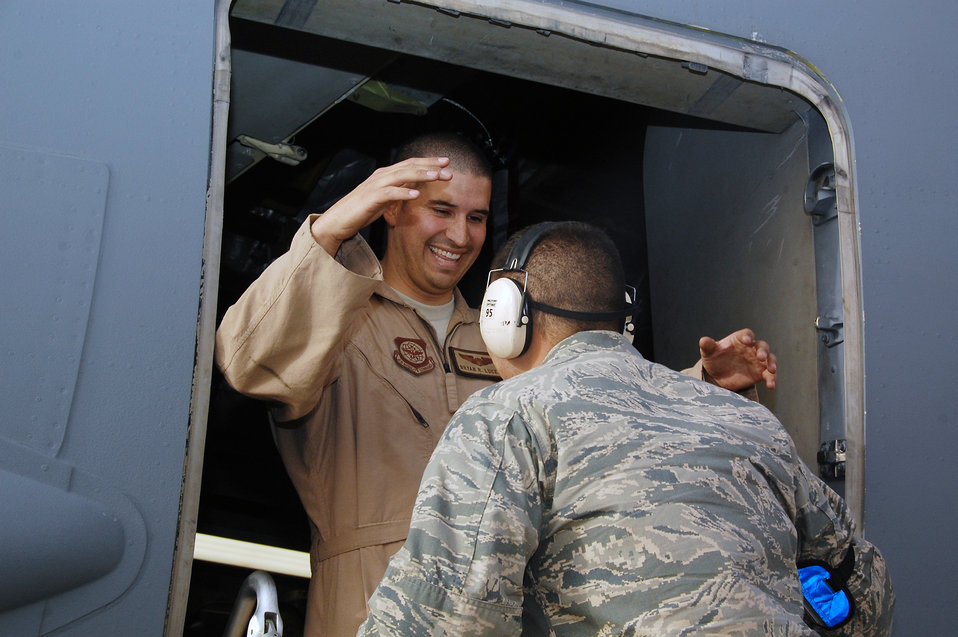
Looking out for big brother

Capt. Bryan Lucero is greeted by his younger brother 2nd Lt. Nathan Lucero following the final flight of his four-month deployment to Southwest Asia. Lieutenant Lucero is the 5th Expeditionary Aircraft Maintenance Squadron officer in charge deployed from McChord Air Force Base, Wash., and Captain Lucero is an a 817th Expeditionary Airlift Squadron C-17 Globemaster III pilot deployed from Dover AFB, Del. The brothers hail from Albuquerque, N.M.